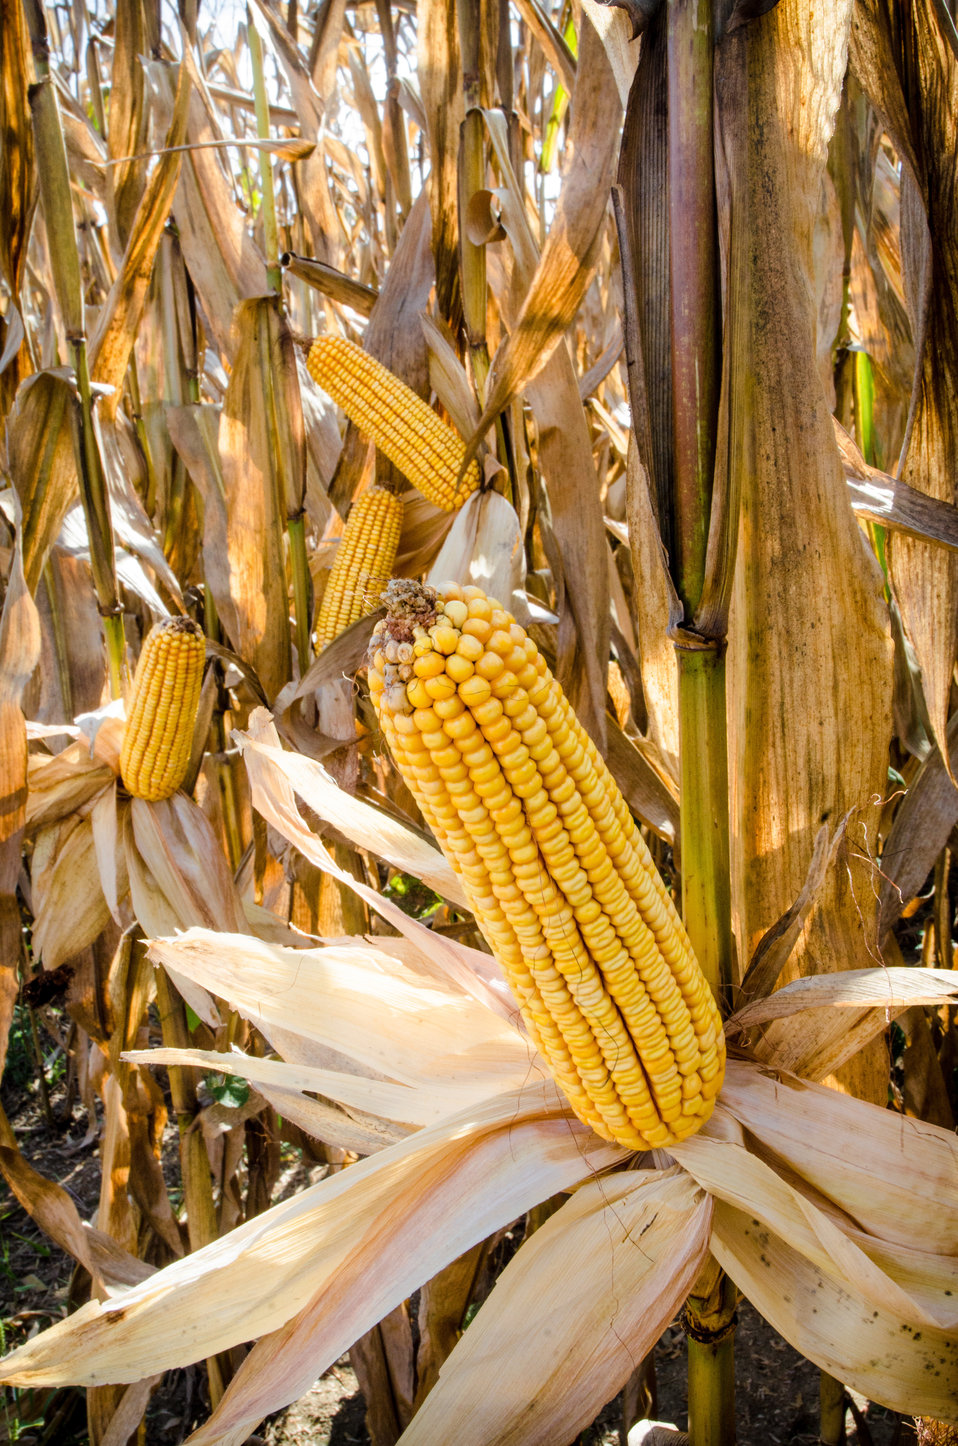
Feed corn, ready to harvest on the stalks at the John N. Mills & Sons farm; a family owned business located in the Hanover and King William Counties Virginia, on Friday, Sept. 20, 2013. Pleasant Level Farm was the original farm from a Land Grant from King George III of England to Nicholas Mills in 1725. The original acreage has never left the Mills family name and continues to be farmed by the family.
Now the farm covers 5,744 acres that produce corn, wheat, soybeans, barley, hay, timber, and pastures a large herd of beef cattle. They have been using conservation and stewardship practices since the 1960s. Some of the efficient practices include no-till planting and cover crops to reduce soil erosion and prevent the leaching of nutrients into ground water, as well as livestock stream exclusion. The farm has several conservation easements that aids in the preservation and restoration of wetlands and waterways. For information about the U.S. Department of Agriculture (USDA), please go to www.usda.gov.